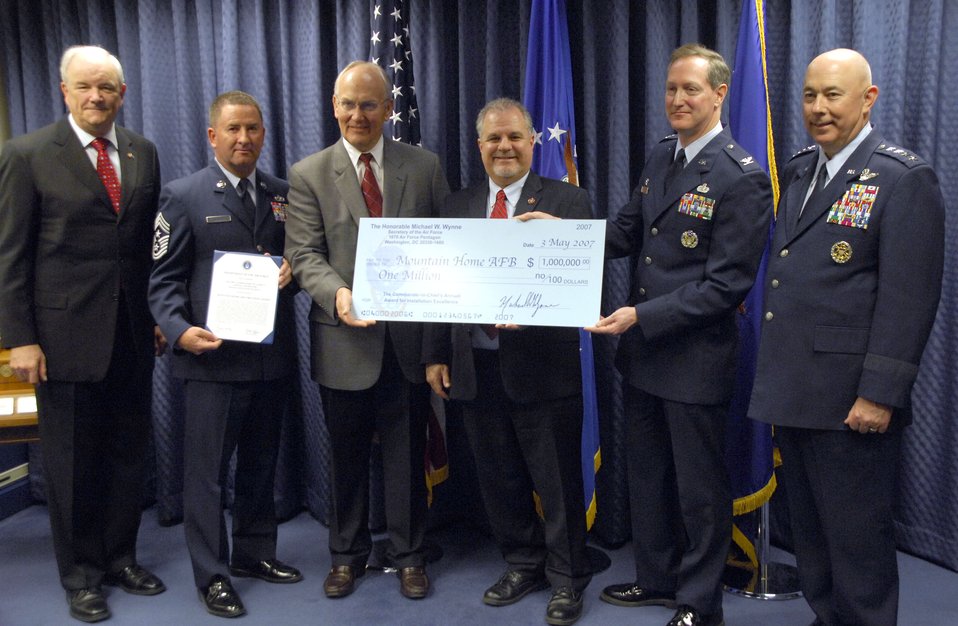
Mountain Home awarded $1 million for Air Force excellence

Secretary of the Air Force Michael Wynne, the 366 Fighter Wing Command Chief Allen Niksich, Idaho senator Larry Craig, Congressman Bill Sali, the 366th Mission Support Group commander Col.Tom Laffey and Air Force Chief of Staff T. Michael Moseley pose for a photo on May 3 with a $1 million check after the presentation of the 2007 Installation Excellence Award to Mountain Home Air Force Base, Idaho at the Pentagon in Washington, D.C. Standing out among the many great improvements made on the base was their robust energy program where they installed new boilers in multiple facilities, reducing heating costs by $1.2 million and later renegotiated natural gas rates, which slashed costs 24 percent, which in turn saved the base $800,000.